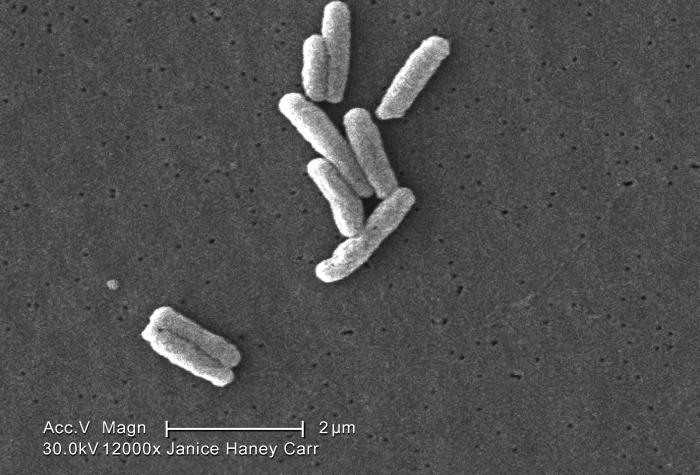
Under a very high magnification of 12000X, this scanning electron micrograph (SEM) depicted a number of Gram-negative Legionella pneumophila bacteria. Please see PHIL 11092 through 11152 for additional SEMs of these organisms, specifically PHIL 11140 for a colorized version of this image. Of particular importance, is the presence of polar flagella, and pili, or long streamers, which due to their fragile nature, in some of these views seem to be dissociated from any of the bacteria. For a better view of these bacterial appendages, see the colorized version.